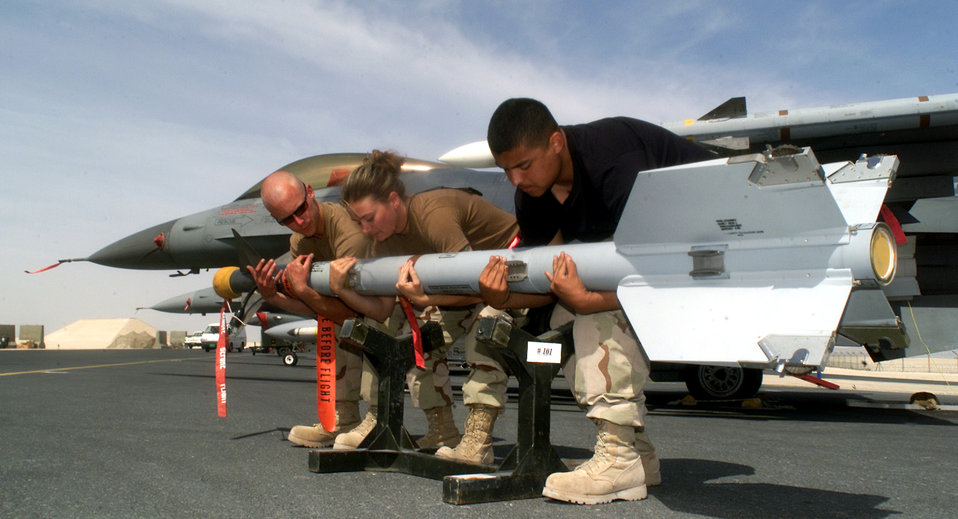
Packin a punch

OPERATION ENDURING FREEDOM -- From left, Airman 1st Class Bradley Smith, Staff Sgt. Jessica German and Airman 1st Class Gerardo Gonzalez hoist an AIM-9 Sidewinder missile before mounting it to an F-16 Fighting Falcon aircraft. The airmen are assigned to 379th Expeditionary Aircraft Maintenance Squadron at a forward-deployed location in Southwest Asia supporting Operation Enduring Freedom.